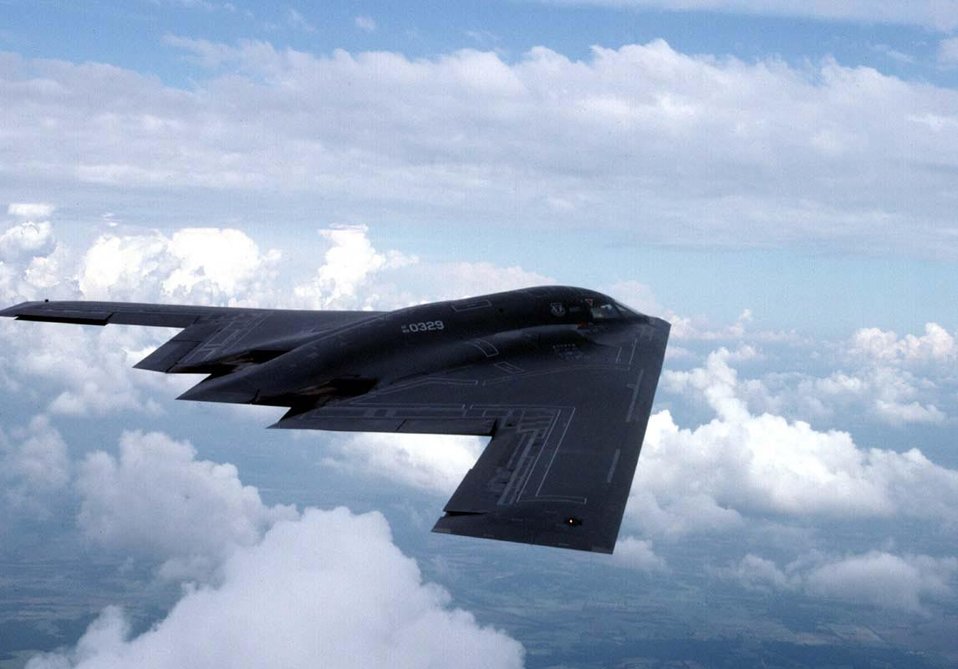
Into the blue

FILE PHOTO -- The B-2 Spirit bomber is a multi-role bomber capable of delivering both conventional and nuclear munitions. A dramatic leap forward in technology, the bomber represents a major milestone in the U.S. bomber modernization program. The B-2 brings massive firepower to bear, in a short time, anywhere on the globe through previously impenetrable defenses.